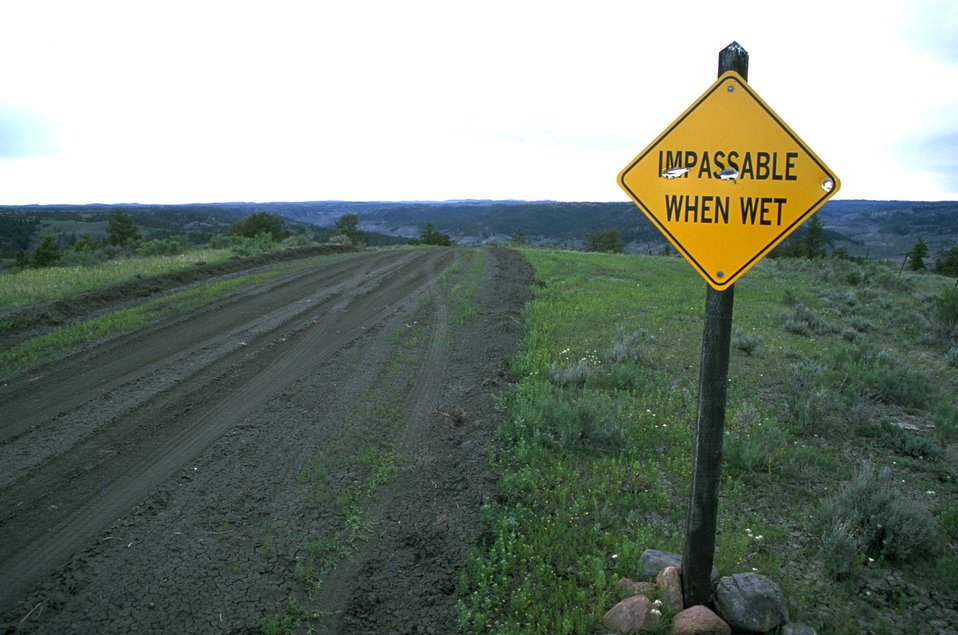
Road warning sign with bullet holes